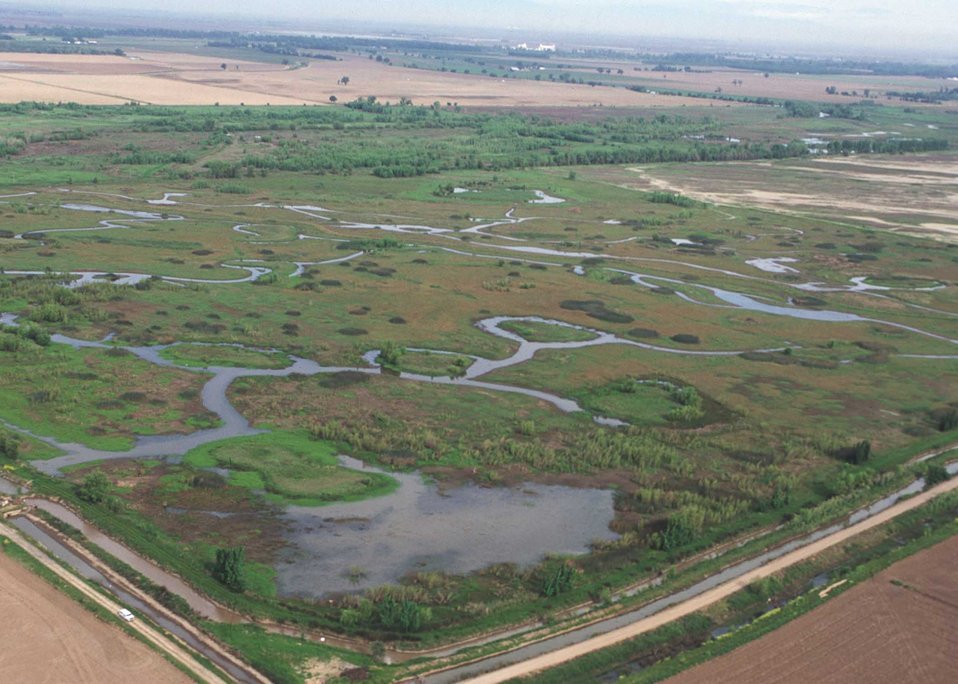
Aerial of wetlands in Butte County, CA.